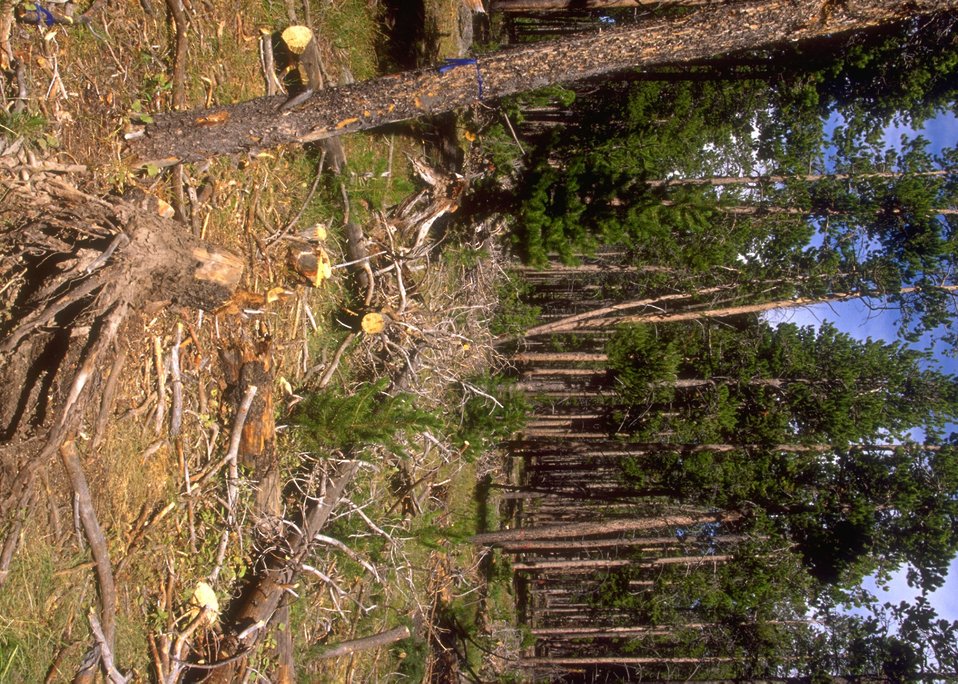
Fuels reduction management in progress at Muddy Mountain Recreation Area, Casper Field Office.